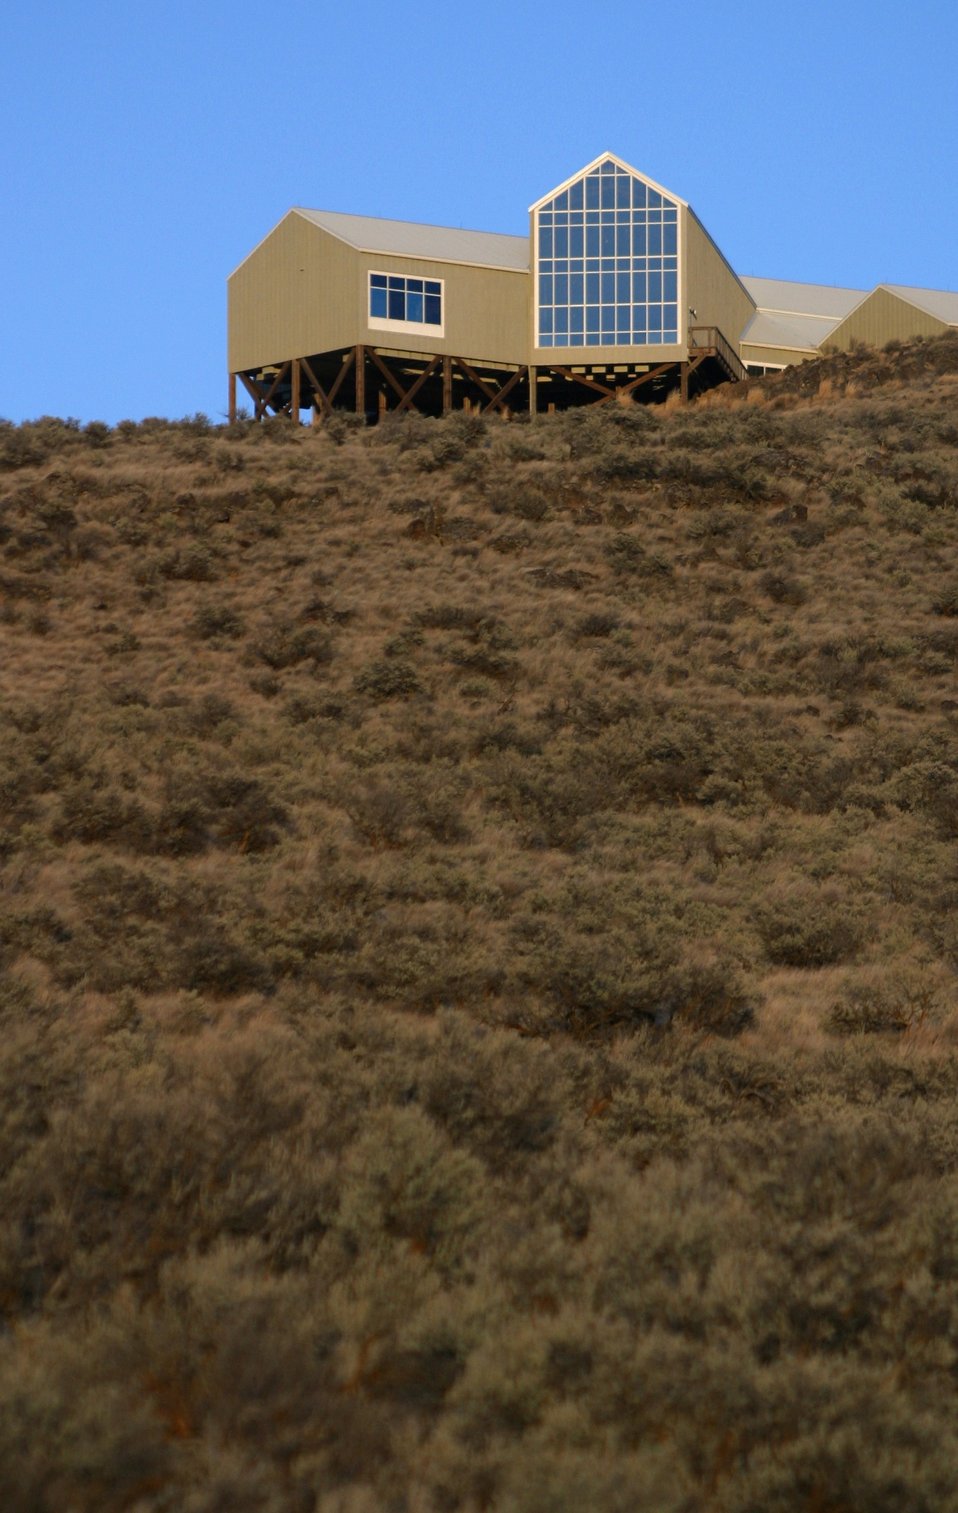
Early evening view of the NHOTIC from the Oregon Trail just below the Center.